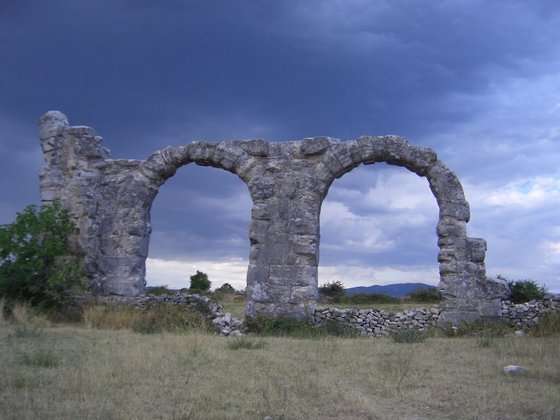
Hrvatski: Logor Burnum, kod Knina